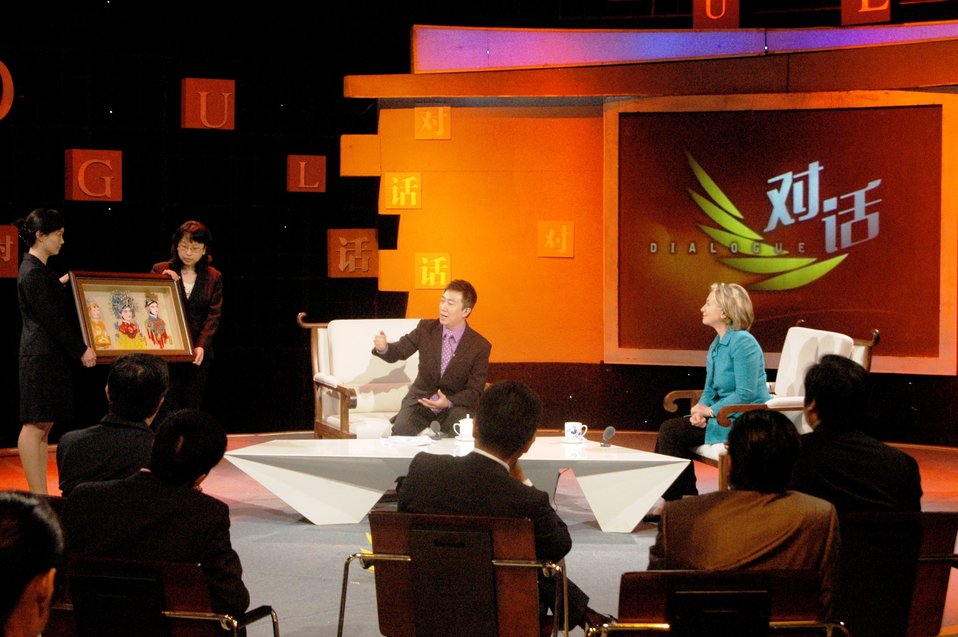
Secretary Clinton Conducts Interview With CCTV

U.S. Secretary of State Hillary Rodham Clinton conducts an interview with Chen Weihong of CCTV, in Beijing, China, on May 25 2010.